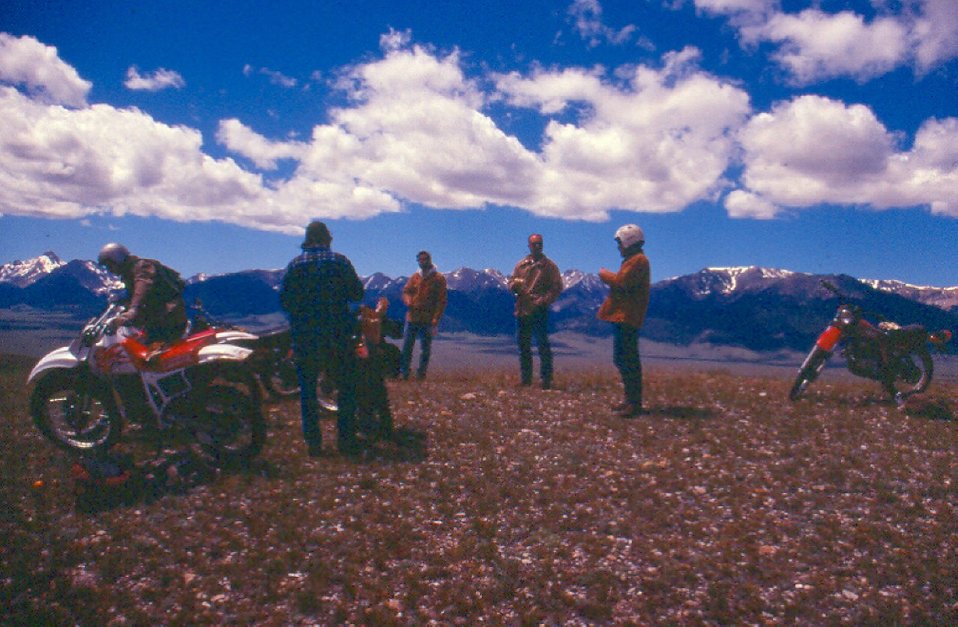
People Salmon Field Office UCSC Upper Columbia Salmon Clearwater District